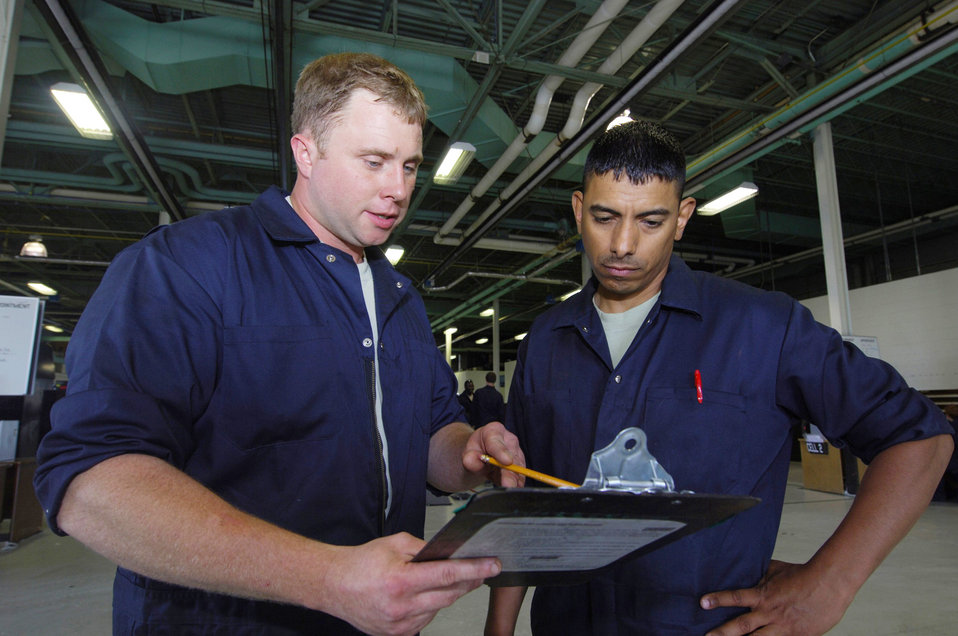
Minot Airmen use AFSO 21 to save $1 million annually

Tech. Sgt. Vincent Hodgdon reviews the daily schedule with Staff Sgt. Esteban Rivera VI July 27 at Minot Air Force Base, N.D. The 5th Maintenance Squadron Aerospace Ground Equipment Flight recently initiated an Air Force Smart Operations for the 21st century process to increase the unit's efficiency to meet the base's mission. The $325 cost investment is expected to yield a return of 60 saved man-hours weekly and more than $1 million annually. Sergeant Hodgdon is the 5th Maintenance Squadron AGE floor leader.